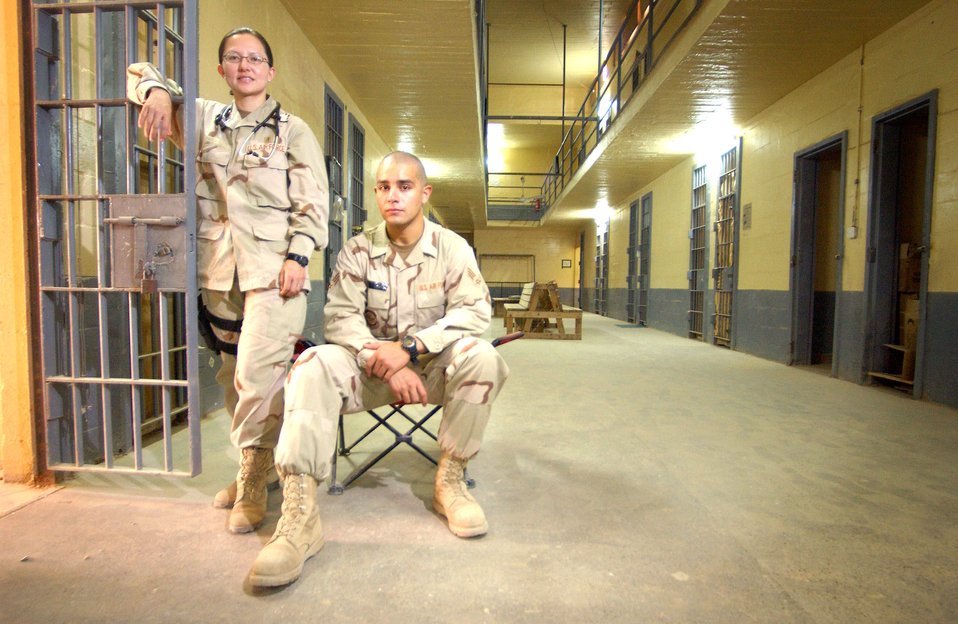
Independent medical team

ABU GHRAIB, Iraq -- Major Carol and Senior Airman Estaban, whose last names are withheld for security purposes, are part of an independent group of Air Force medics who maintain the health of detainees at Abu Ghraib prison. The people serving at the prison live in the cell blocks that once housed victims of Saddam Hussein's regime.